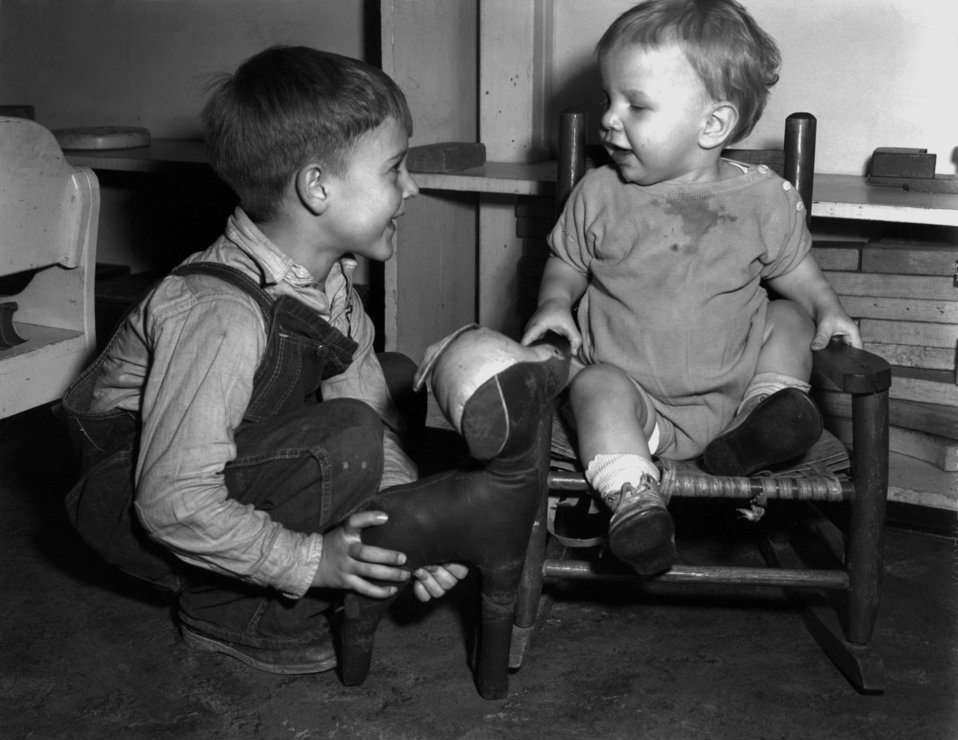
Nesper House Oak Ridge

3262-10 DOE photo Ed Westcott 1-23-1947Child care for working mothers/famlies Oak Ridge Tennessee